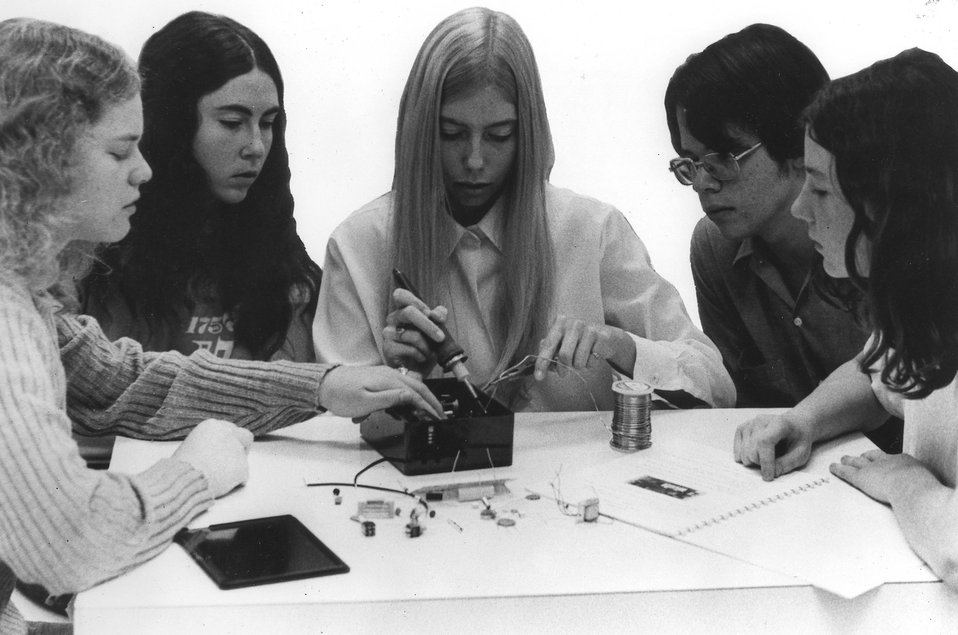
A group of high school students constructs basic measuring devices for testing air, water, noise, and radiation-pollution levels. c. 1972